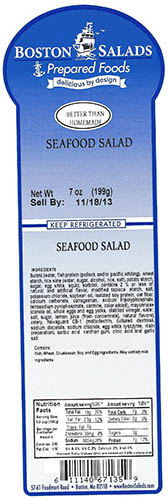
RECALLED – Prepared salads

October 24, 2013 – Product Recall – Boston Salads and Prepared Foods Recalling Ready-To-Eat Products Because of Possible Health Risk.